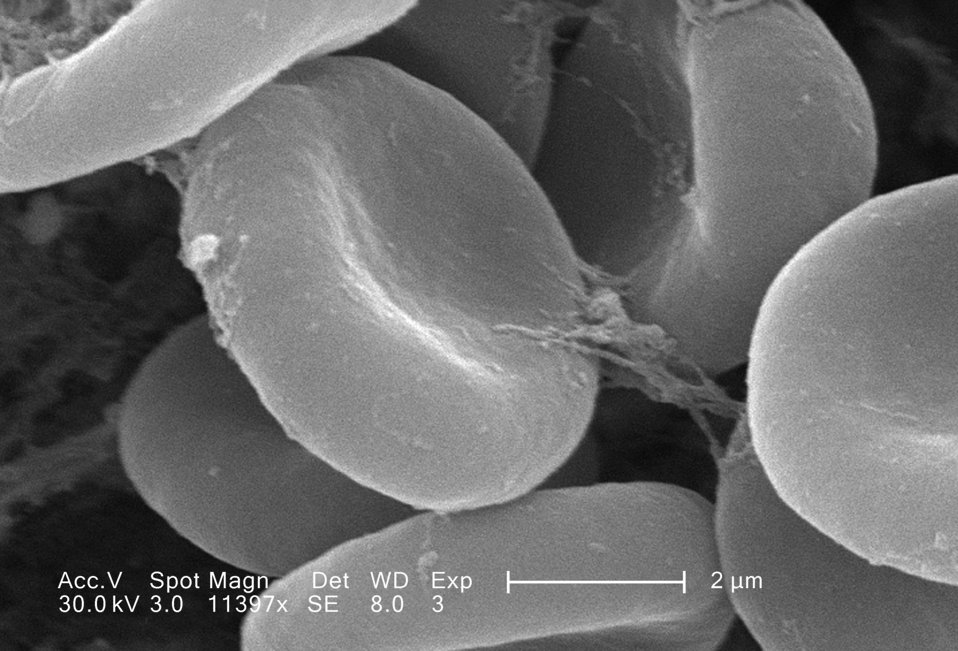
This highly enlarged scanning electron micrograph (SEM) depicted a closer look at the details exhibited by of number of red blood cells found enmeshed in a fibrinous matrix on the luminal surface of an indwelling vascular catheter; Magnified 11397x. In this instance, the indwelling catheter was a tube that was left in place creating a patent portal directly into a blood vessel.